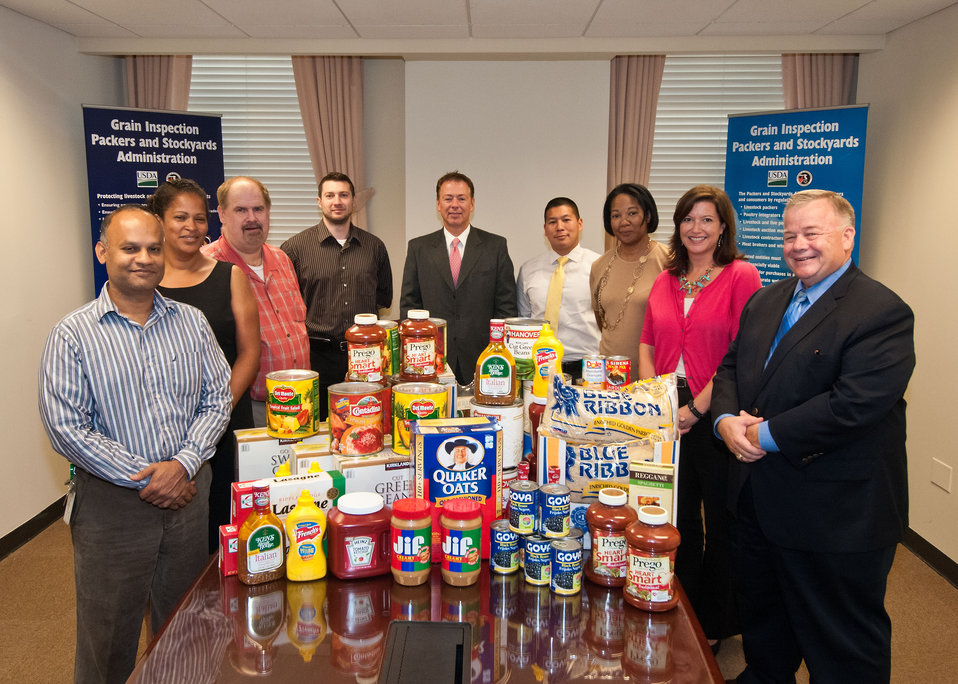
20120101-GIPSA-RBN-Feds Feed Families

Front left: Grain Inspection Packers and Stockyards Administration employees Abhai Singh, Tammi Lindsey, Dexter Thomas, Matt Shepley, Randal Jones, Deputy Administrator, Linda Alston, Angela Emrich and Larry Mitchell, Administrator display the food donation collected from GIPSA employees for the Feds Feed Families Food drive at the United States department of Agriculture in Washington, D.C., Monday, August 27, 2012.